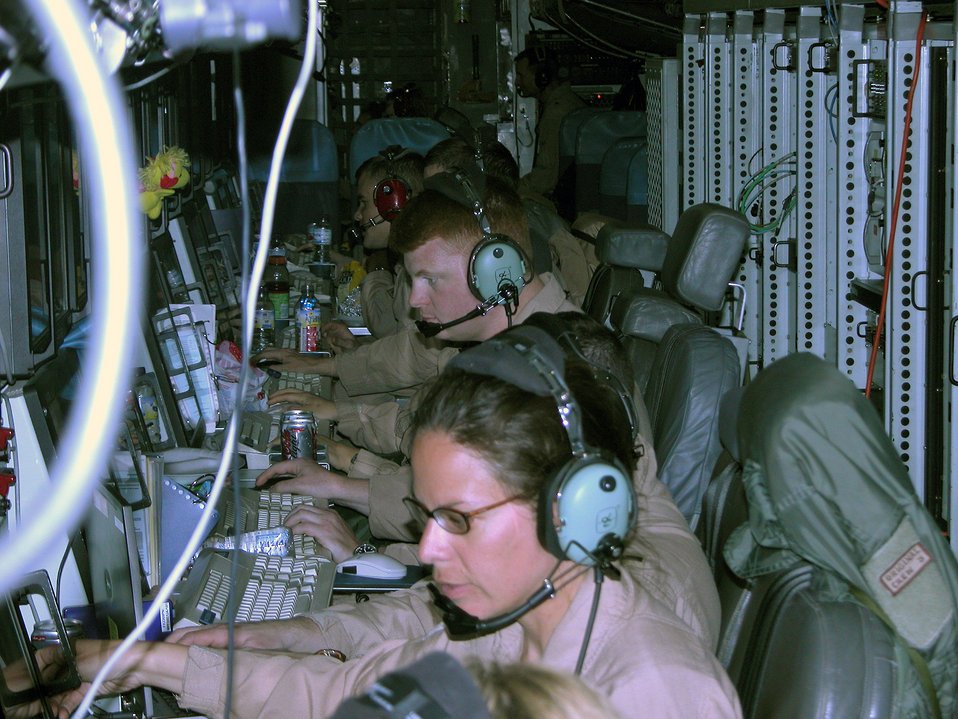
Airmen keep a step ahead of enemy

Airmen from the 763rd Expeditionary Reconnaissance Squadron provide real time on-scene intelligence collection, surveillance and analysis April 4 to forces in the air and on the ground during a mission in Southwest Asia.